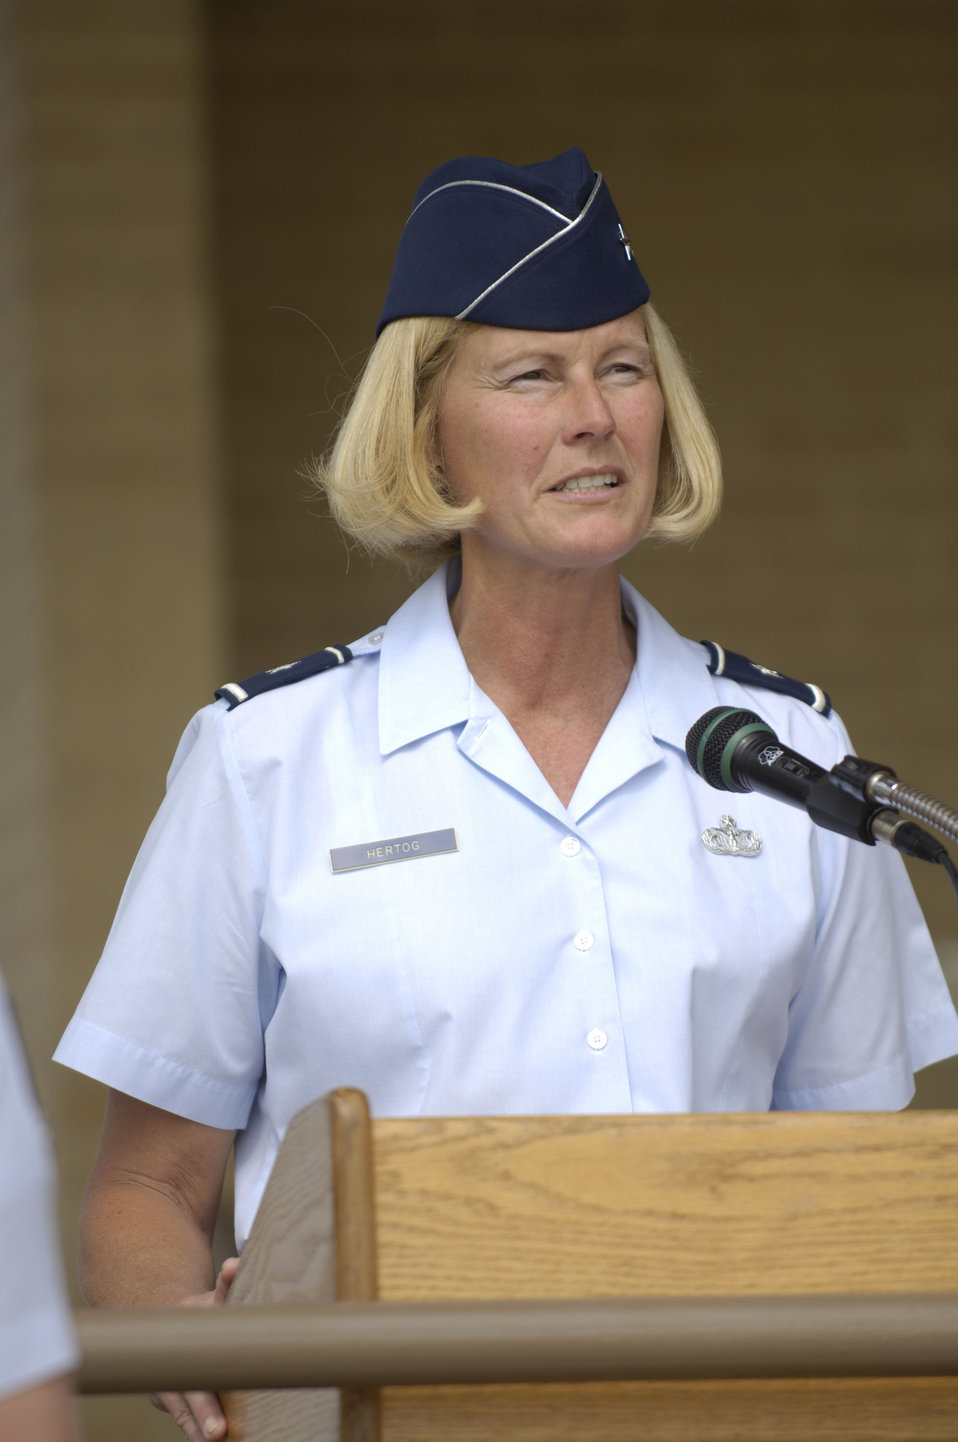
Lackland honors nine enlisted heroes

Brig. Gen. Mary K. Hertog speaks during a Basic Military Training Memorialization Ceremony on Lackland Air Force Base, Texas, on Wednesday, June 14. The 37th Training Wing commander and several hundred people witnessed the ceremony that dedicated nine training facilities in honor of nine enlisted heroes who have served from World War II to present-day operations in the war on terrorism.